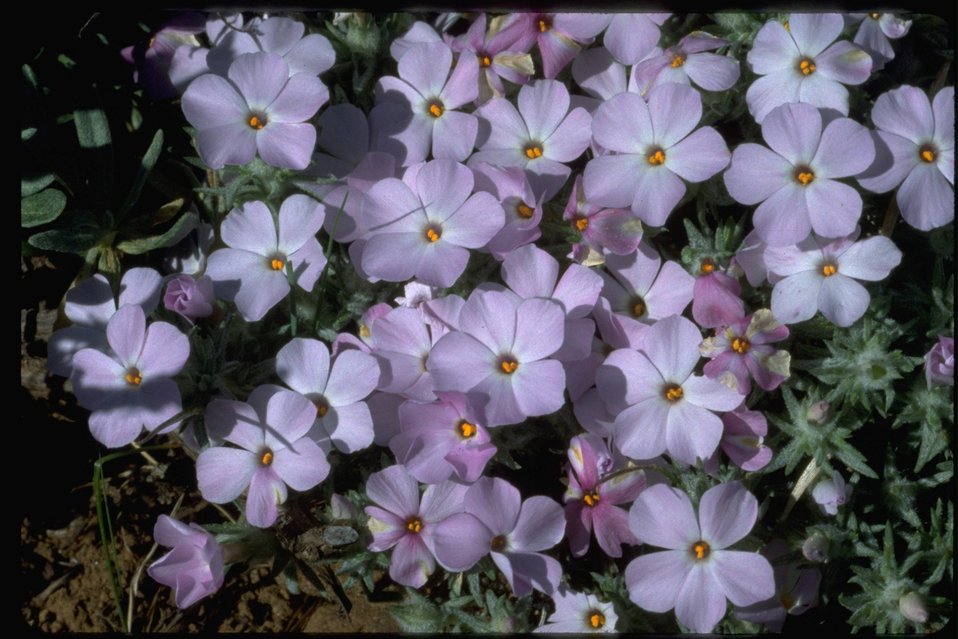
Medium shot of Phlox wildflowers.